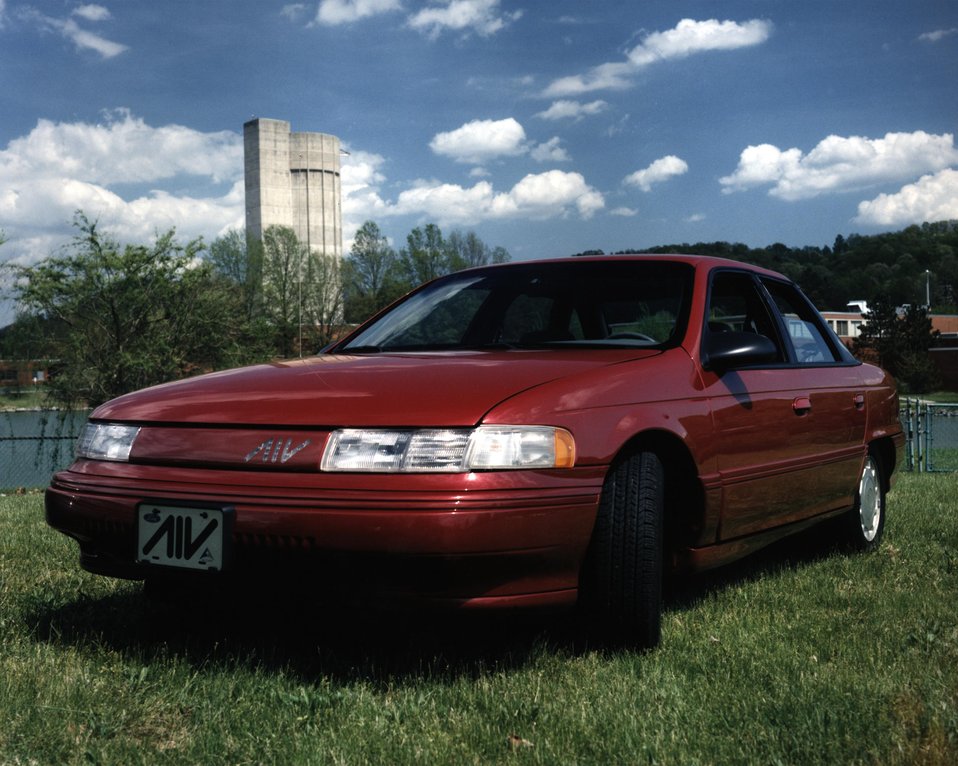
PNGV PROTOTYPE ALUMINUM INTENSIVE VEHICLE, (AIV).

ORNL IS THE SITE OF MUCH OF THE RESEARCH TO DEVELOP CARS OF THE FUTURE THROUGH THE PARTNERSHIP FOR A NEW GENERATION OF VEHICLES. PNGV IS A PARTNERSHIP BETWEEN THE U.S. GOVT. AND THE U.S. COUNCIL FOR AUTOMOTIVE RESEARCH, REPRESENTING FORD, CHRYSLER AND GENERAL MOTORS. THE EFFORTS INCLUDE DEVELOPING COST EFFECTIVE MASS PRODUCTION TECHNOLOGY REDUCING AUTOMOBILE WEIGHT USING ALUMINUM, IMPROVING FUEL EFFICIENCY AND LOWERING ADMISSIONS.